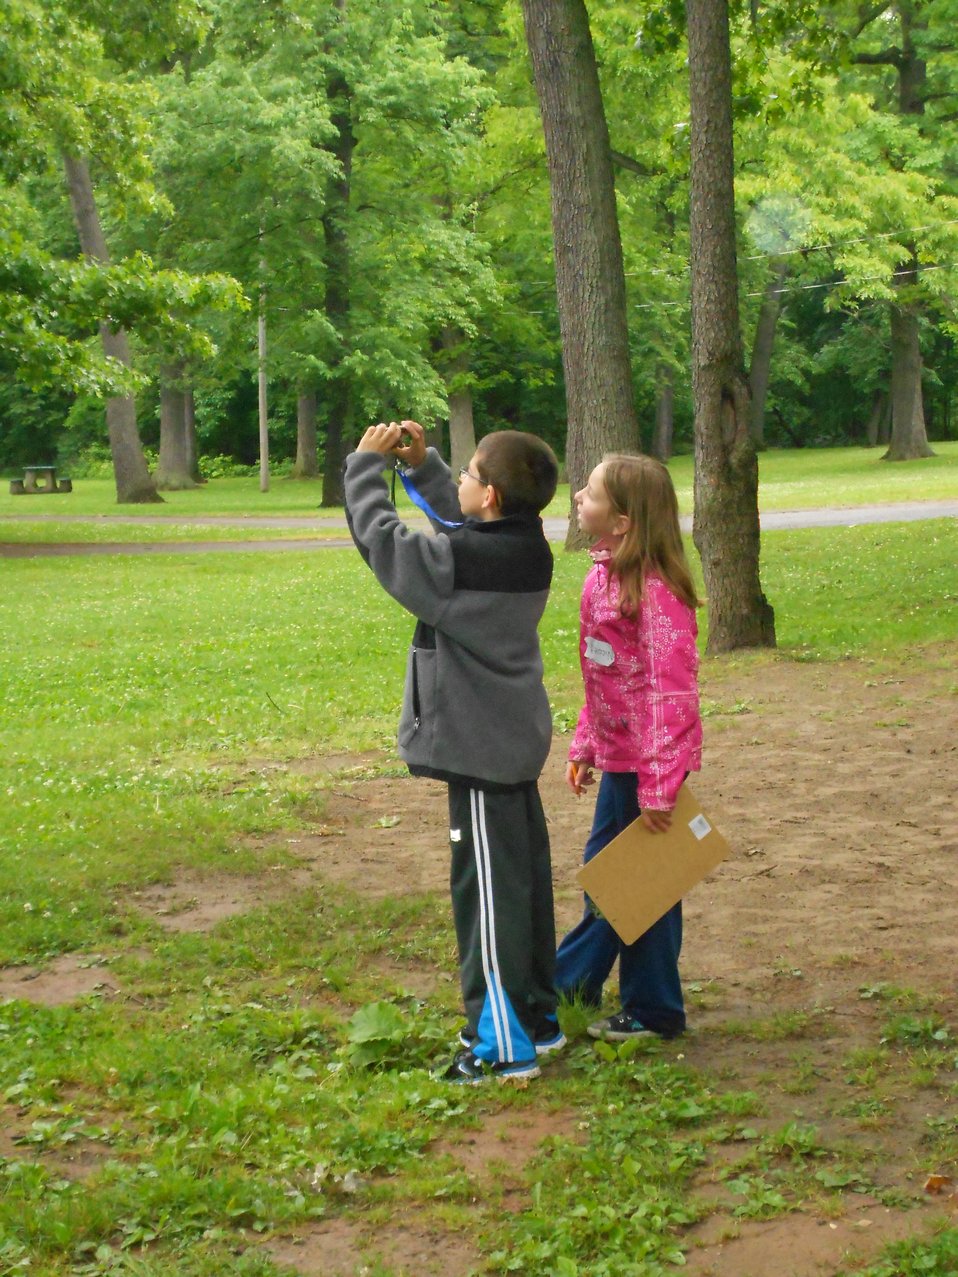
Taking pictures

Credit: Sandra Keppner/ USFWS

Two students peer through the viewfinder to inspect the tops of trees.